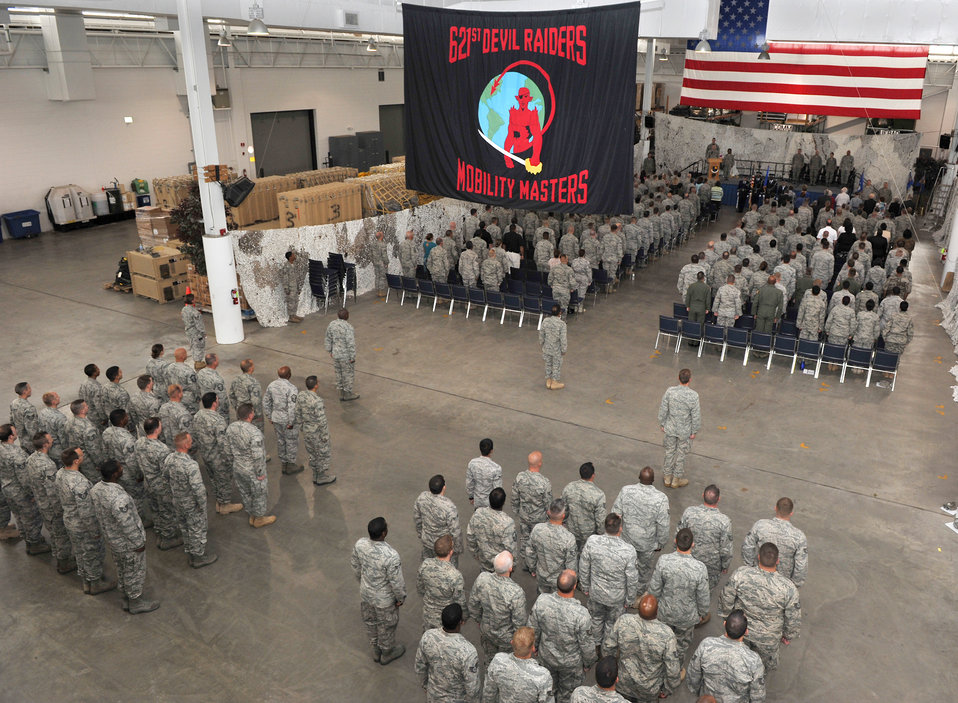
816th CRG

Members of the 816th Contingency Response Group watch the posting of the colors during the 816th CRG's inactivation ceremony at the 621st Contingency Response Wing's Global Reach Deployment Center June 11, 2010, at Joint Base McGuire-Dix-Lakehurst, N.J. The unit was founded Mar. 1, 2005, and saw worldwide service as the wing's first CRG.